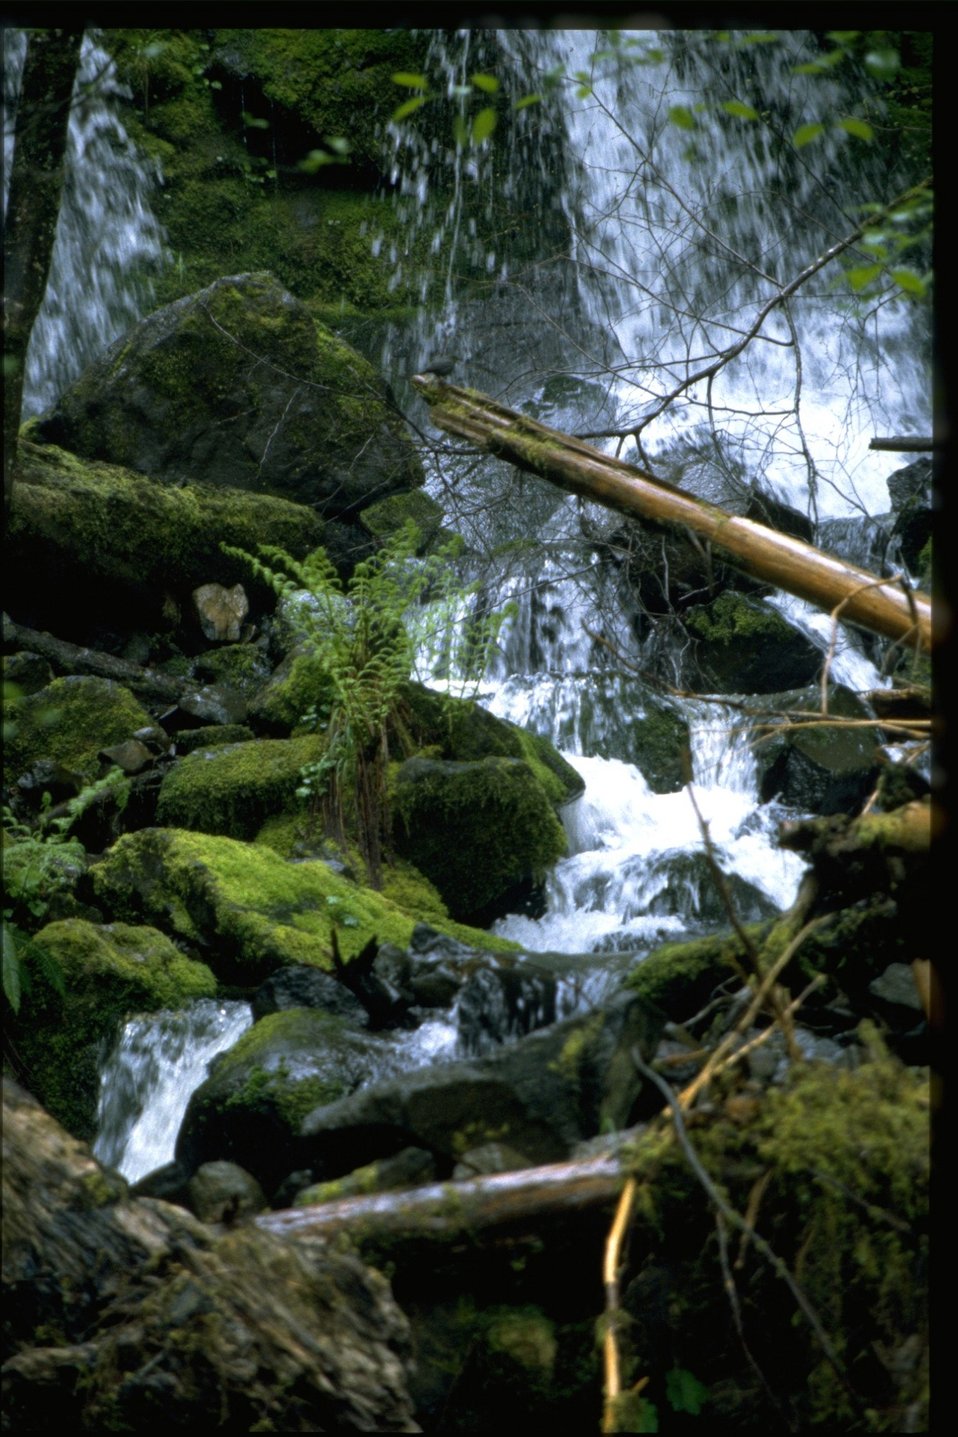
Swiftwater Stream.